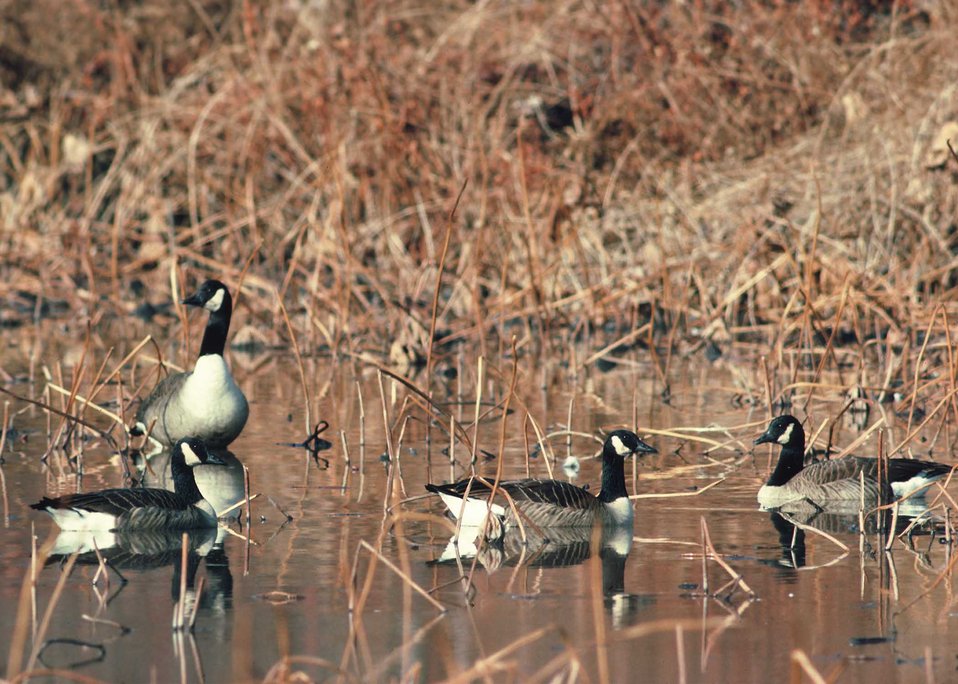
Canadian geese rest confortably in wetlands on Maryland's Eastern Shore.